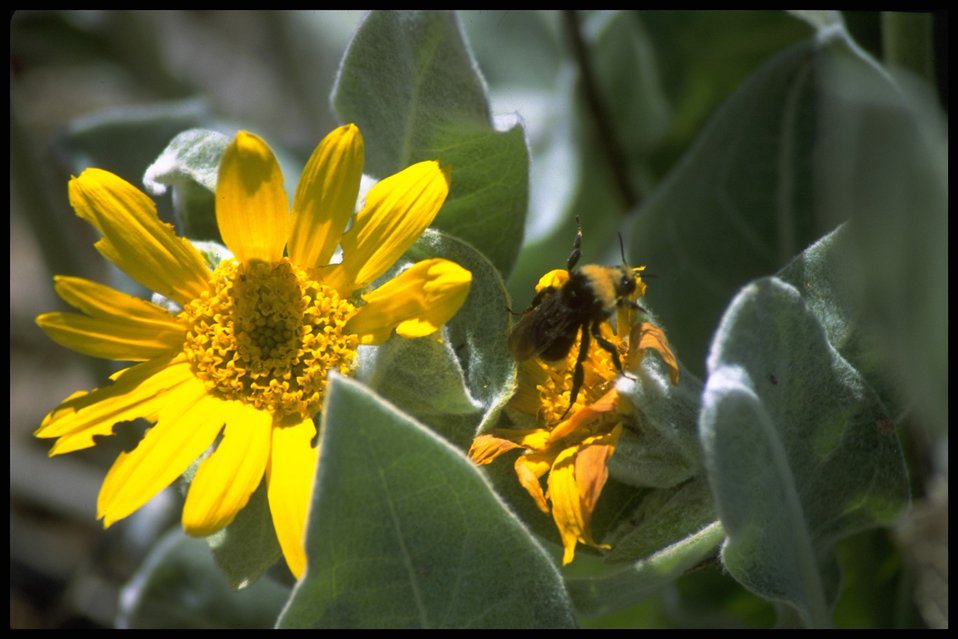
Close shot of bee and Wooly Wyitha wildflower, Lakeview District.